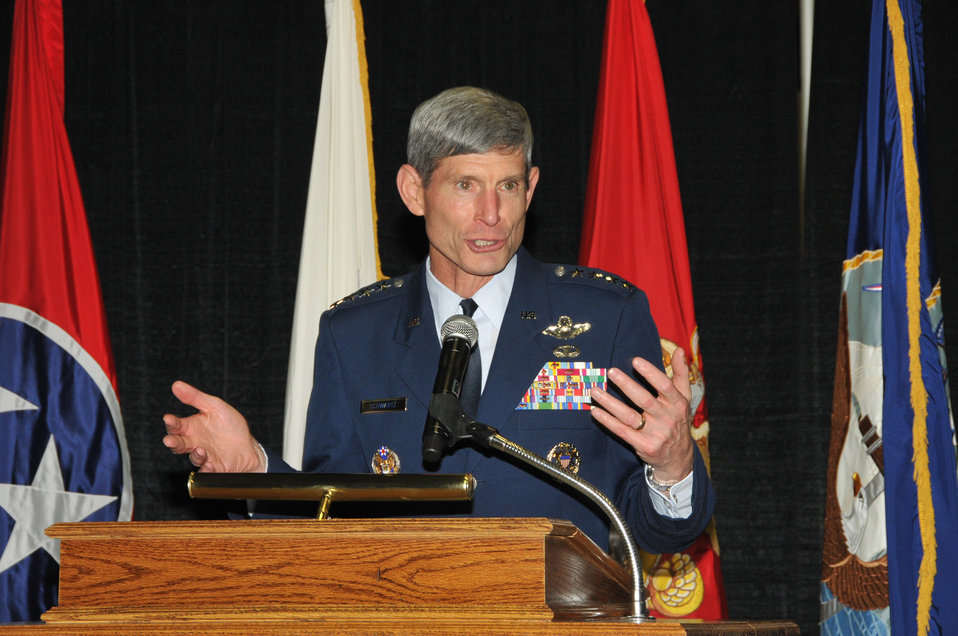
Air Force chief of staff visits Arnold

Chief of Staff of the Air Force Gen. Norton Schwartz speaks to a crowd of approximately 600 people at the Arnold Community Council banquet Nov. 17 at the Calsonic Arena in Shelbyville, Tenn.